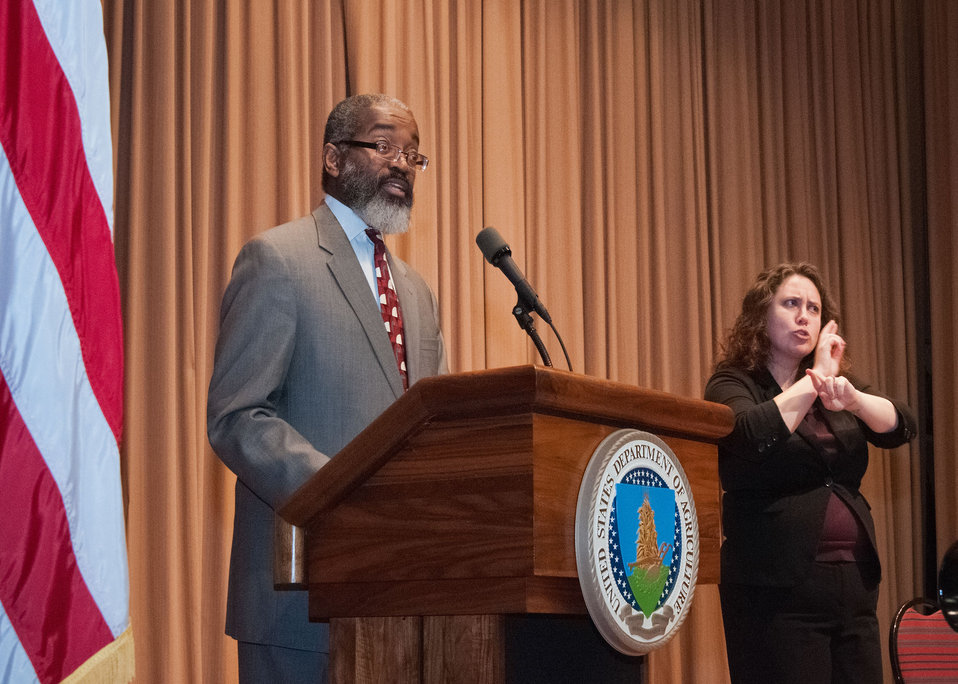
Agriculture Acting Assistant Secretary for Administration Dr. Gregory Parham offers opening remarks at the U.S. Department of Agriculture's (USDA) 2012 National Disability Employment Awareness celebration in the Jefferson Auditorium at USDA in Washington, D.C. on Wednesday, Oct. 17, 2012. The theme for the event was, “A Strong Workforce is an Inclusive Workforce: What Can You Do?